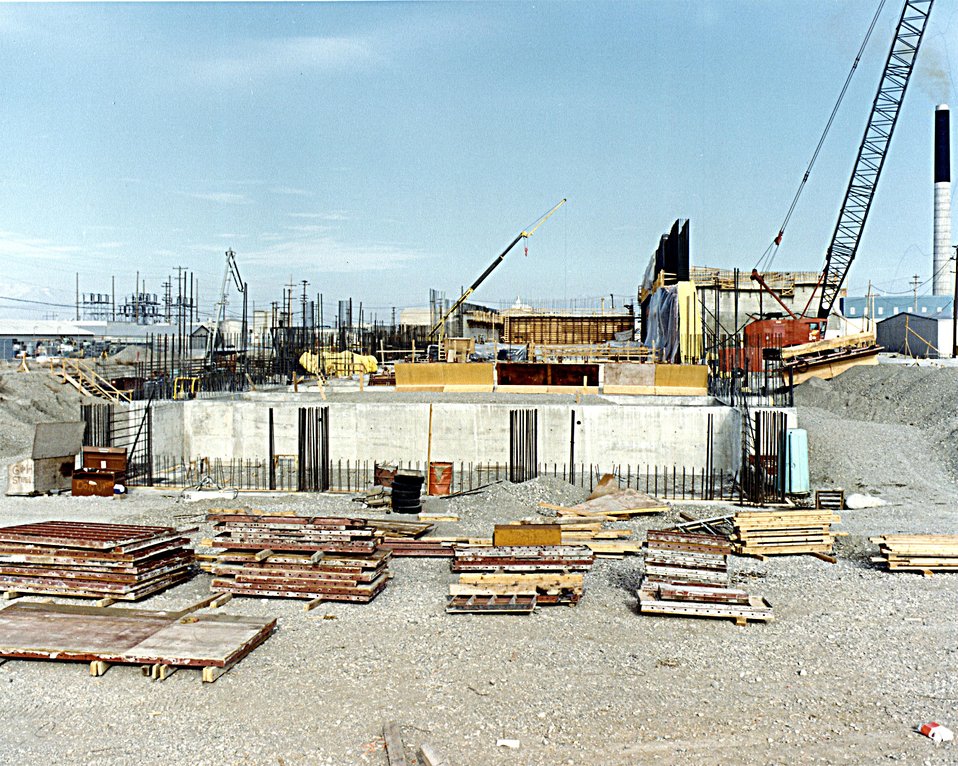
VIEW OF FLUORINEL FACILITY CONSTRUCTION PROGRESS FROM ONE END.
THE FLUORINEL FACILITY WILL INCLUDE AREAS FOR THE RECEIPT, HANDLING, STORAGE, AND DISSOLUTION OF SPENT REACTOR FUEL. THE DISSOLVED SOLUTION WILL BE TRANSFERRED TO EXISTING FACILITIES AT THE IDAHO FUEL PROCESSING FACILITY FOR RECOVERY OF CONTAINED URANIUM. THE FACILITY WILL PROCESS A WIDE VARIETY OF SPENT FUELS, INCLUDING NAVAL, TEST, AND RESEARCH REACTOR FUELS, TO INCREASE THE AMOUNT OF URANIUM RESOURCE AVAILABLE TO THE UNITED STATES.